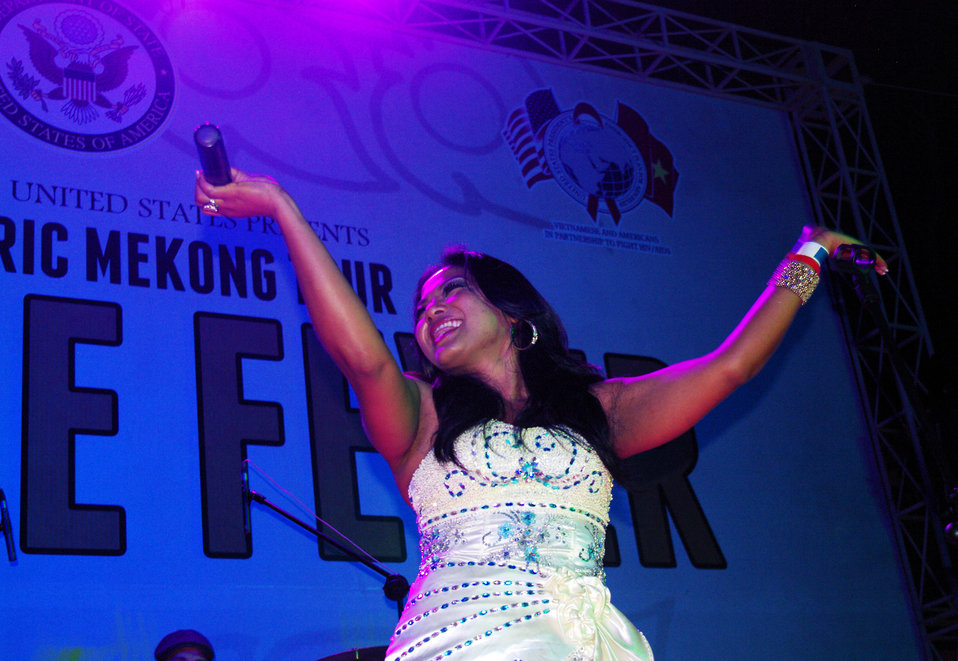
PEPFAR, U.S. Embassy Host Dengue Fever Concert in Hanoi